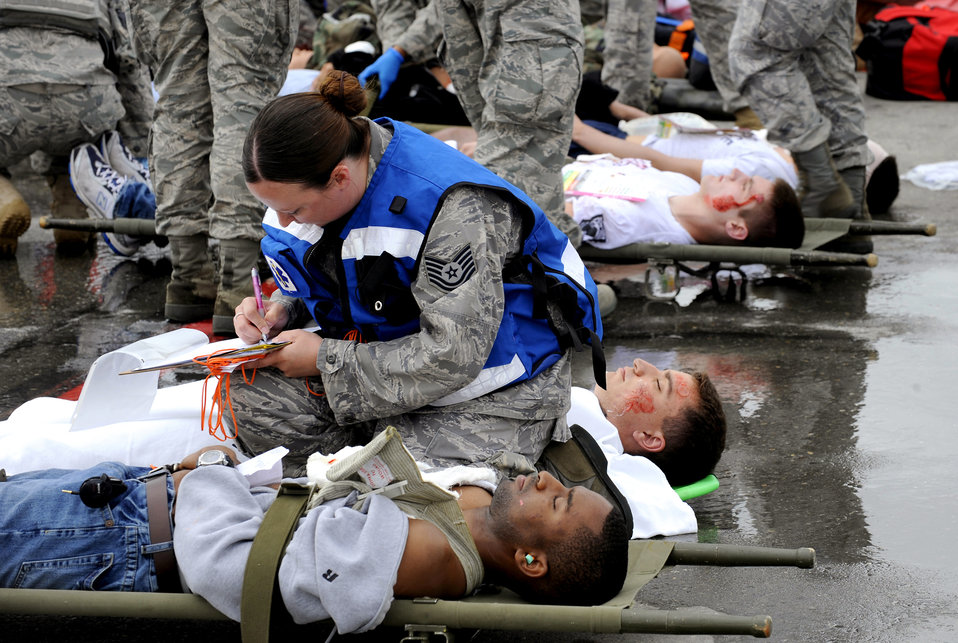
Transport now!

Crash